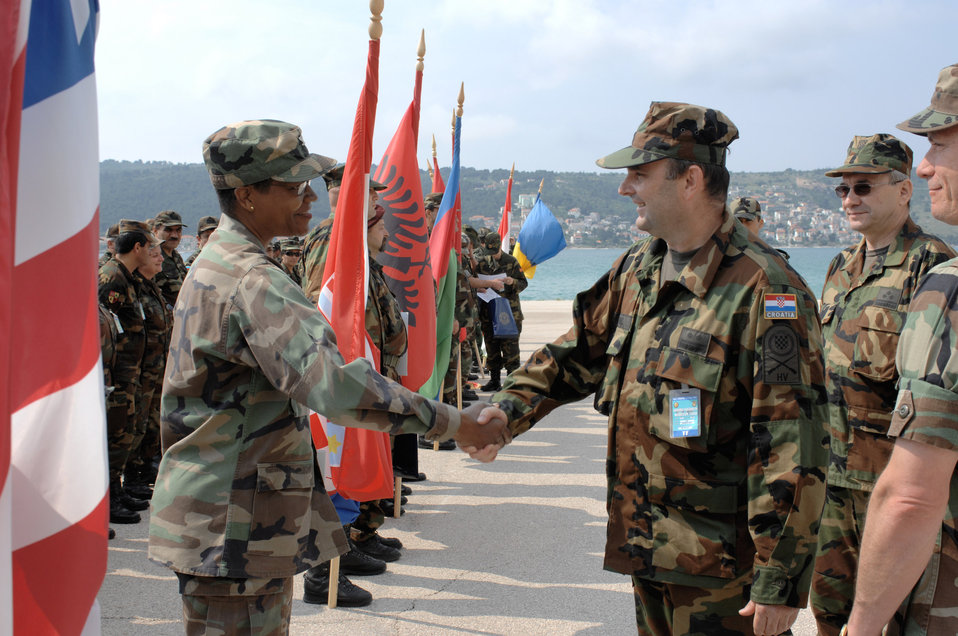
Multinational exercise in Croatia wraps up

Croatian army Lt. Col. Davorko Jokic bids farewell to U.S. Air Force Col. Angela Thompson May 14 during the closing ceremony of the 2008 Medical Training Exercise in Central and Eastern Europe, or MEDCEUR, at the Divulje Training Base in Croatia. Colonel Jokic is the MEDCEUR co-commander. Colonel Thompson is the 458th Expeditionary Medical Squadron commander.